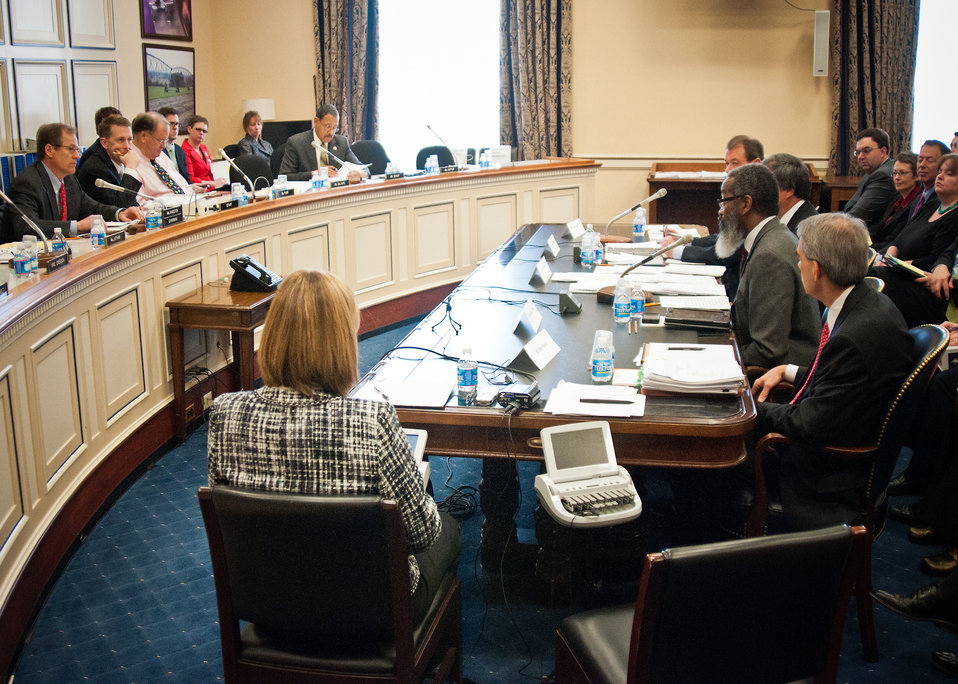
Congressman Jack Kingston, Georgia, Chairman of the of the House Agriculture Appropriations Committee poses questions to Ed Avalos, Under Secretary, Marketing and Regulatory Programs along with representatives of the Marketing and Regulatory Program agencies testifying on Capitol Hill before the House Agriculture Appropriations Subcommittee on the agencies fiscal year 2013 budget requests in Washington, D.C., Tuesday, March 6, 2012.